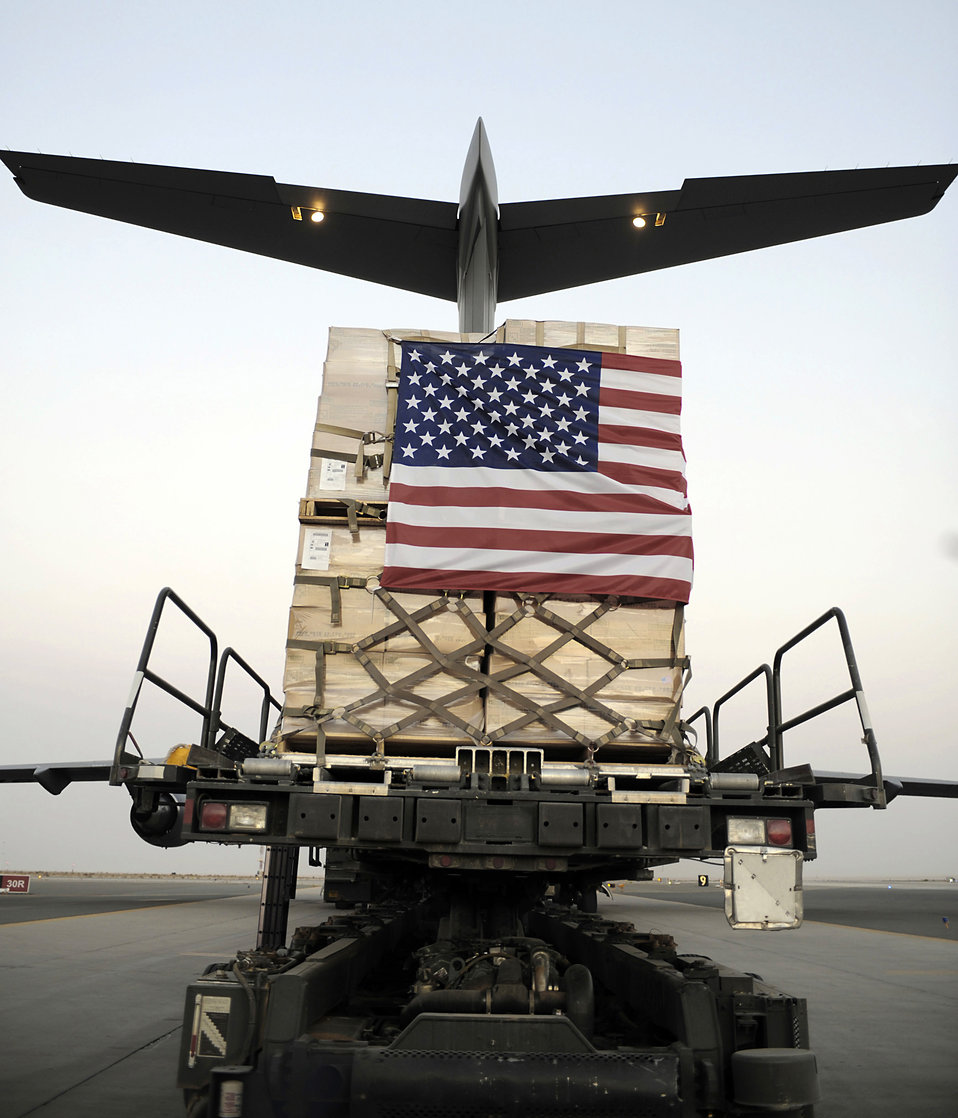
U.S. airlift aids Pakistan's war-torn Swat Valley

A pallet containing humanitarian relief supplies destined for Pakistan is prepared to be loaded into the cargo bay of a C-17 Globemaster III May 20 at an air base in Southwest Asia.